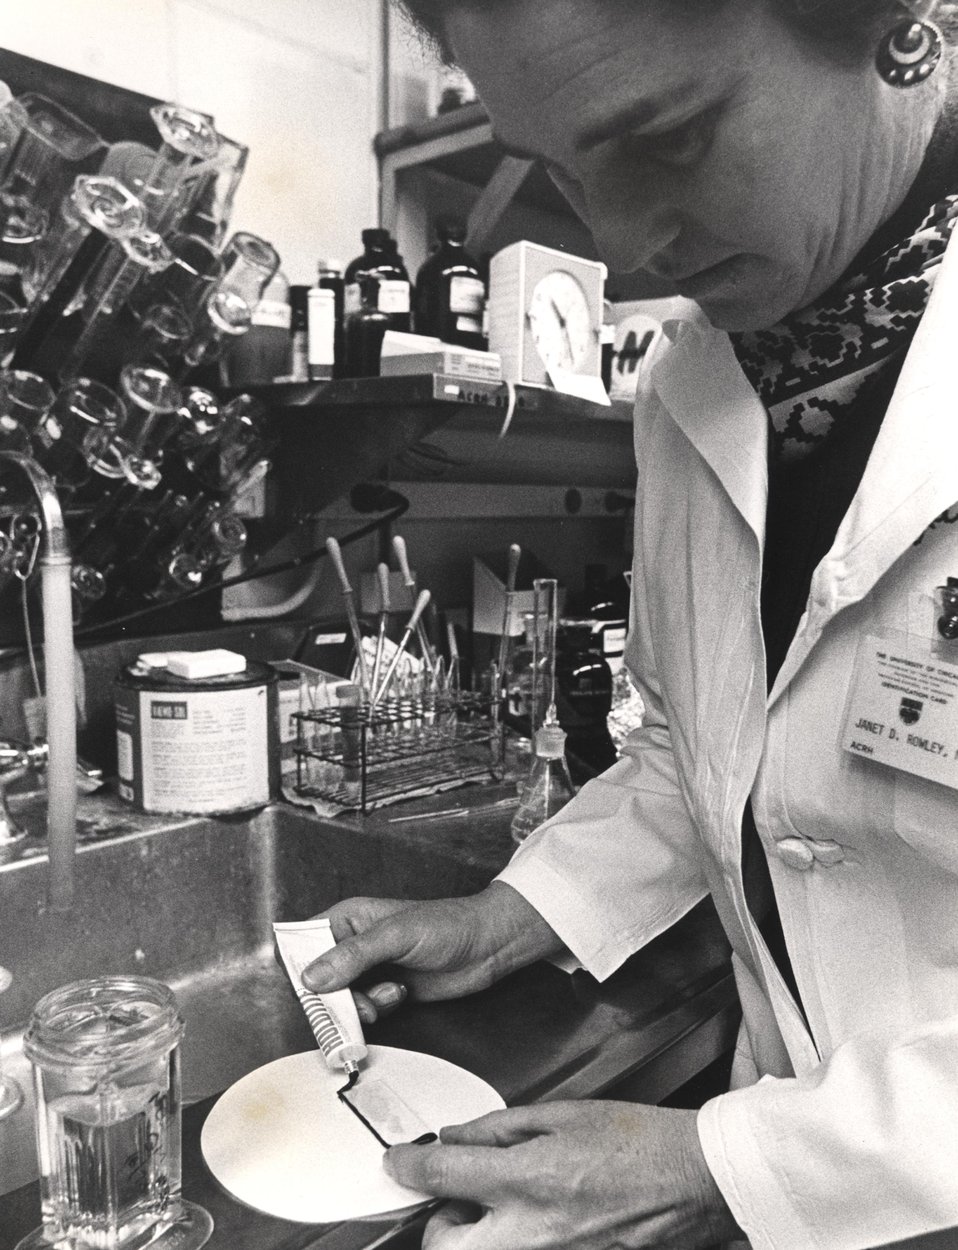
The cytogenetics of human leukemia's are being studied at the University of Chicago with the aid of new techniques which permit identification of each pair of chromosomes.